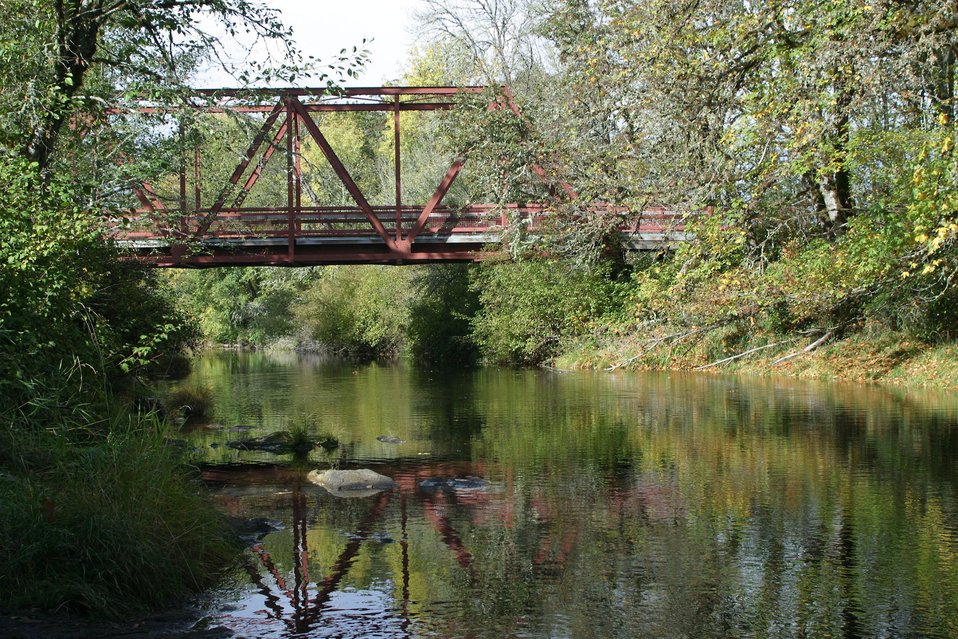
The the 15.6 mile Row River Trail trail not only attracts mountain bicyclists and horseback riders, but also road bicyclists and even a few in-line skaters.